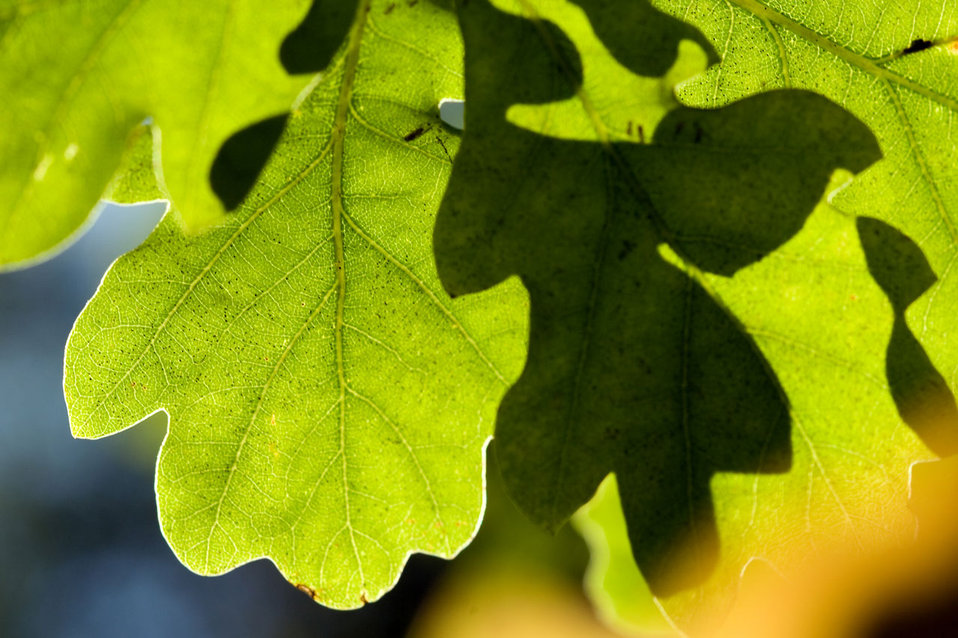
Green leaves

Sun rays through green leaves.